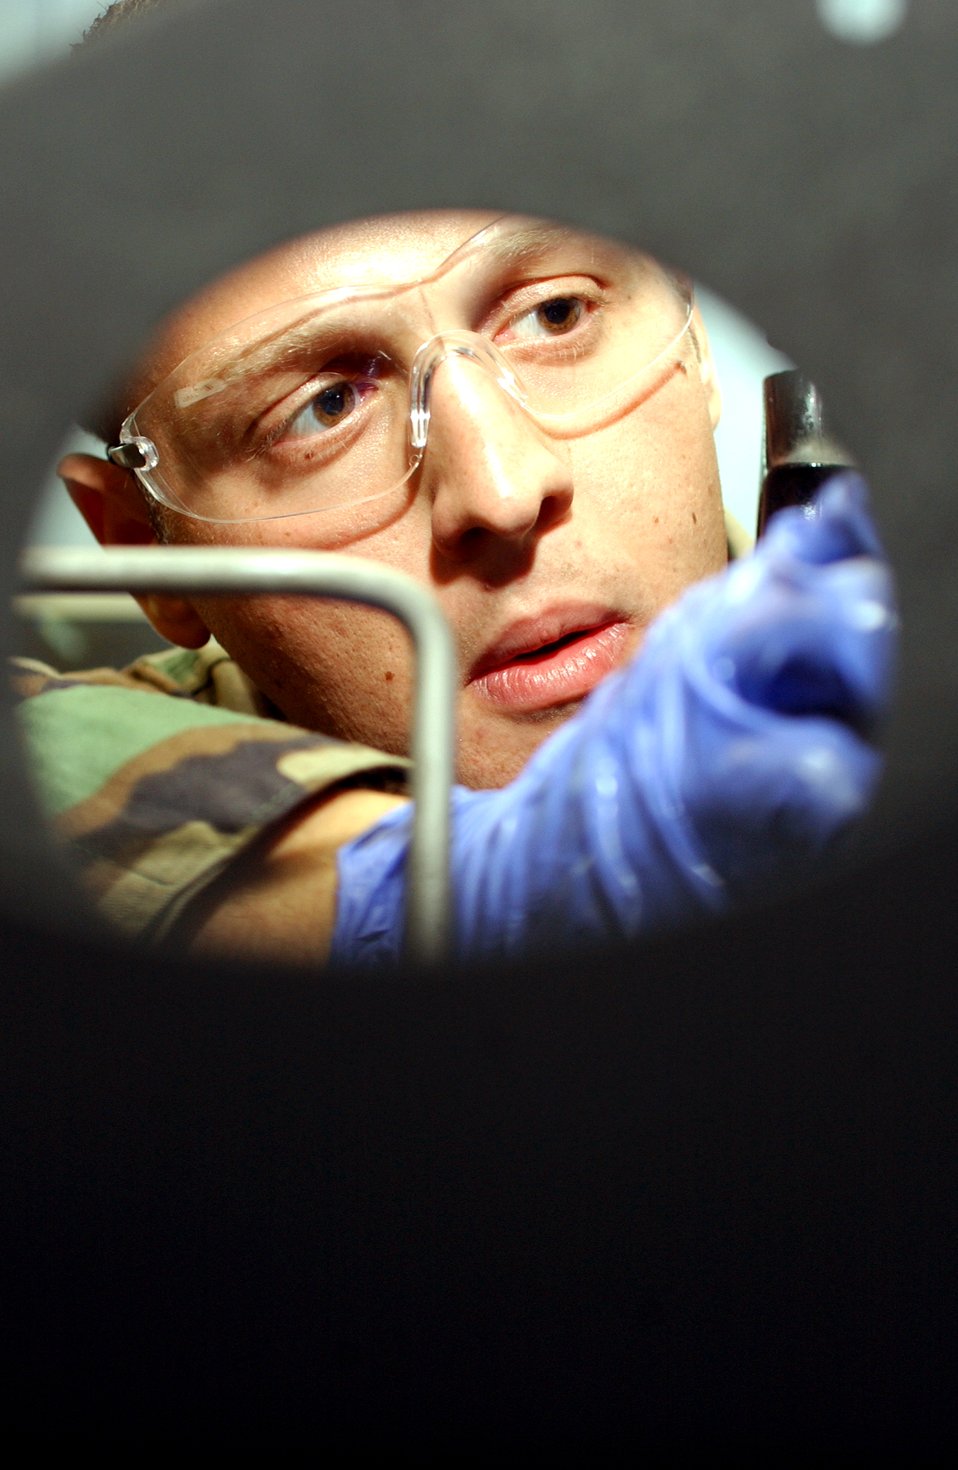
Hawk eye

ROYAL AIR FORCE MILDENHALL, England -- Airman 1st Class Jake Graffeo inspects a gun barrel at the 352nd Maintenance Helicopter Maintenance Unit Weapons Section. Cleaning and inspecting usually takes 1.5 to two hours per gun. Airman Graffeo is assigned to the 352nd Maintenance Squadron.